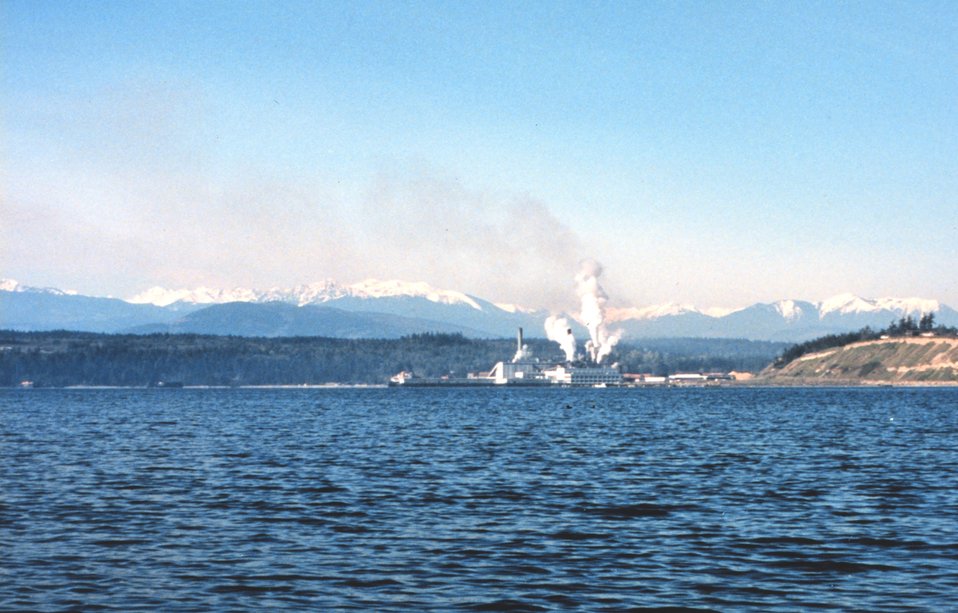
An industrial facility on Puget Sound